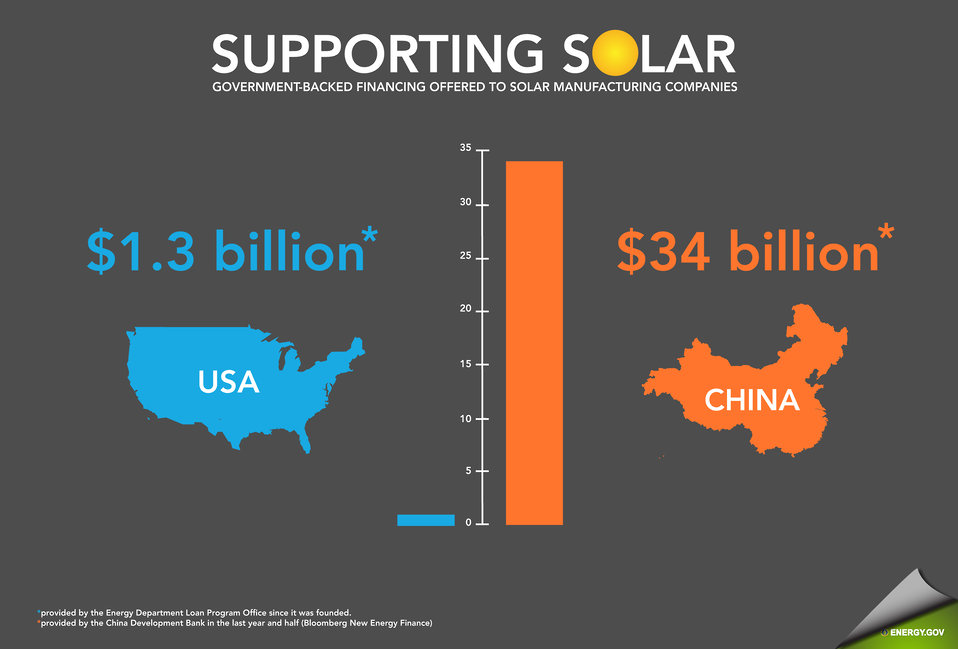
Government-backed financing offered to solar manufacturing companies.
Energy Department Image | Public Domain
November 17, 2011